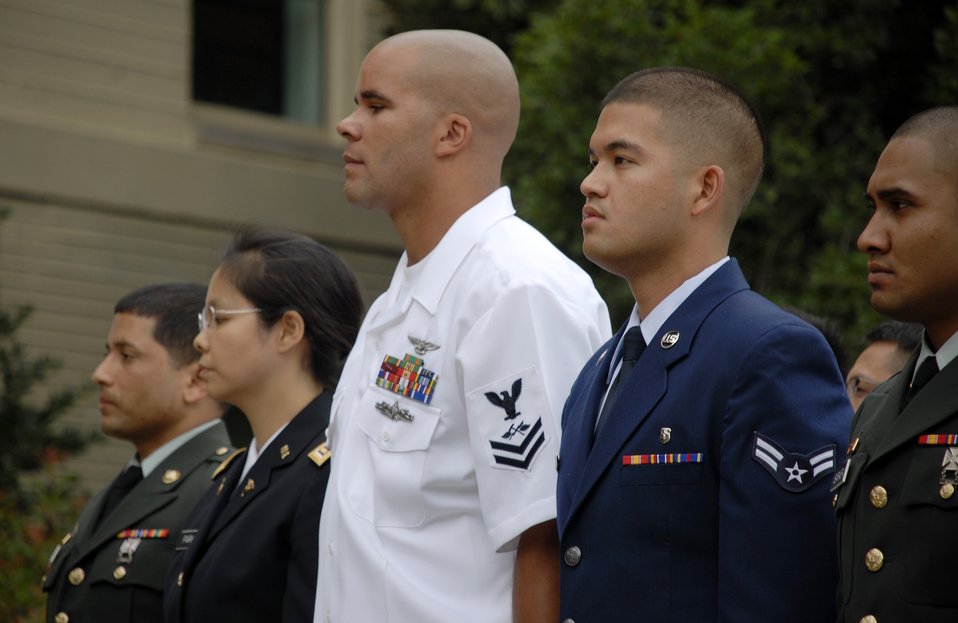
Airman becomes U.S. citizen

Airman 1st Class Carlo Santiago stands with other service members during the Presentation of Candidates Sept. 10, 2009, at the U.S. Military Naturalization Ceremony at the Pentagon. During the ceremony Secretary of Defense Robert Gates thanked the 31 service members for their service and Secretary of Homeland Security Janet Napolitano led them with the oath of allegiance.